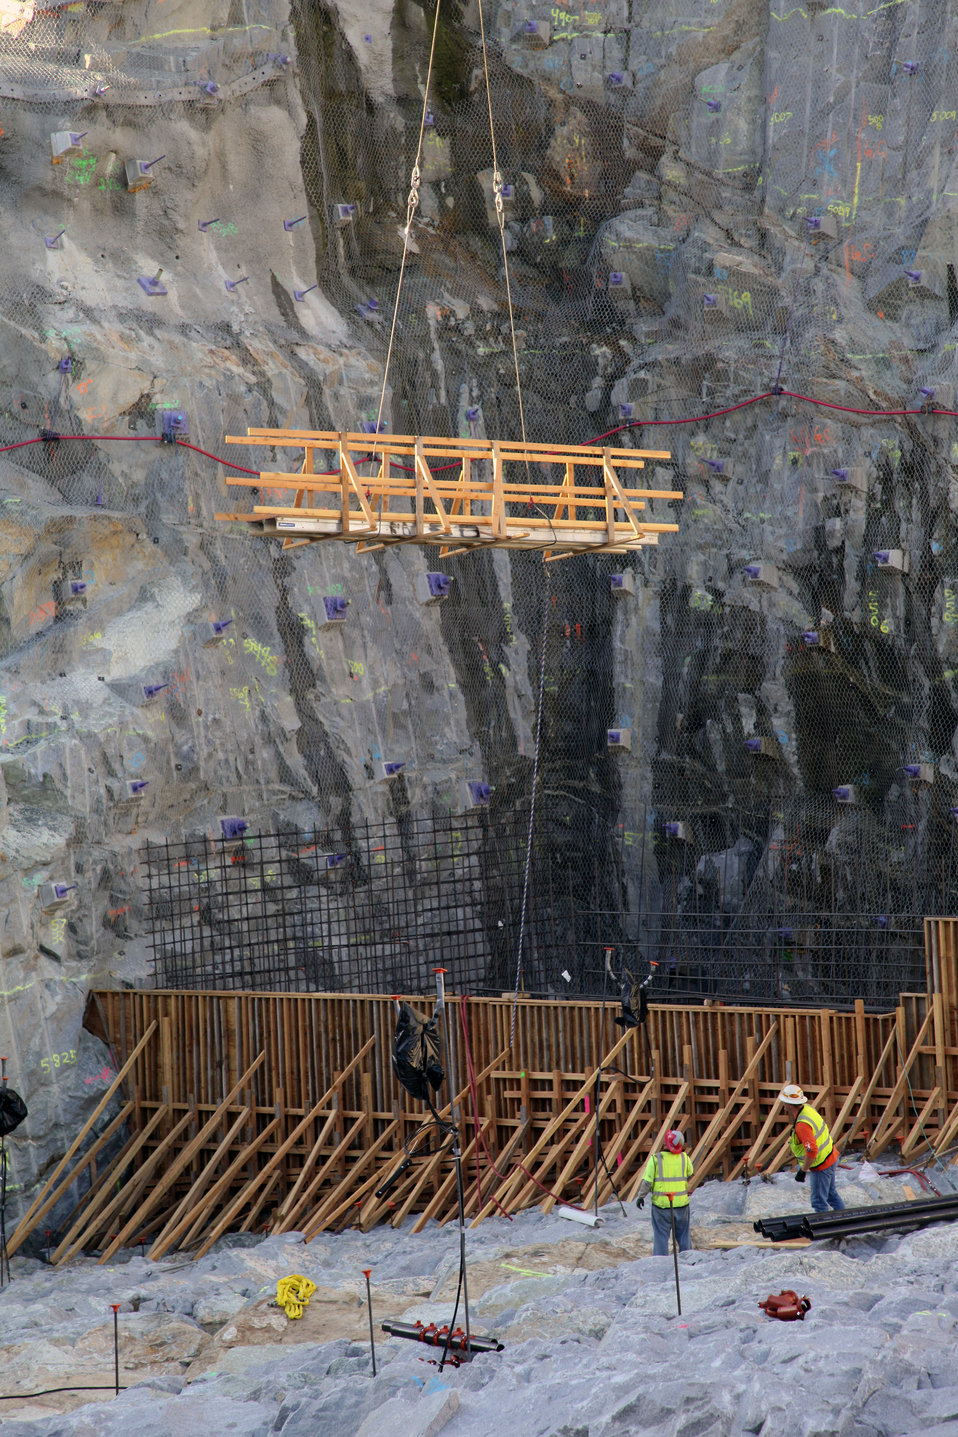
Preparations for concrete placement at the Folsom auxiliary spillway

A safety walkway bridge is lowered into the construction site for the auxiliary spillway at the Folsom Dam in Folsom, Calif., May 30, 2012. Contractors for the U.S. Army Corps of Engineers Sacramento District will use walkway bridges and stairs with handrails to safely navigate the rocky slopes while working on preparations for concrete placement at the site. The spillway project is part of the Folsom Dam Joint Federal Project, a joint effort of the Corps, U. S. Bureau of Reclamation, the Central Valley Flood Protection Board and the Sacramento Area Flood Control Agency to improve the safety of the current dam and reduce flood risk for the greater Sacramento area.